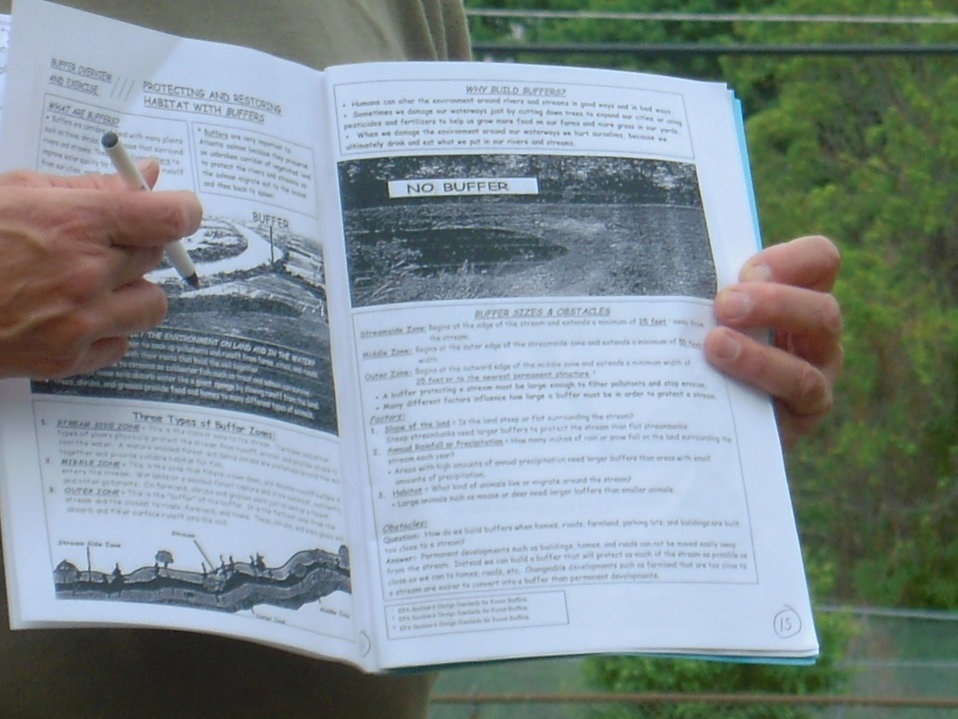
Plant studies booklet